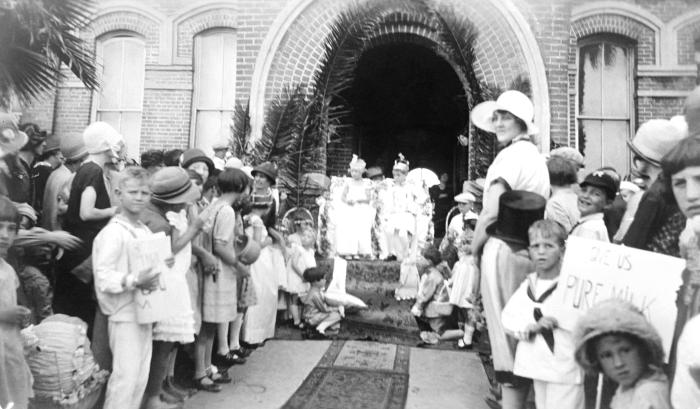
This historic photograph depicted a gathering of schoolchildren and mothers who had assembled in observance of 'Child Health Day'. The two children seated in the doorway have been crowned 'king' and 'queen' of the observance. The setting is a Texas town. The original image was scanned from a glass lantern slide donated by the Minnesota Department of Health, and is one of a historical collection of documents and photographs devoted to observances of Child Health Day in the United States.